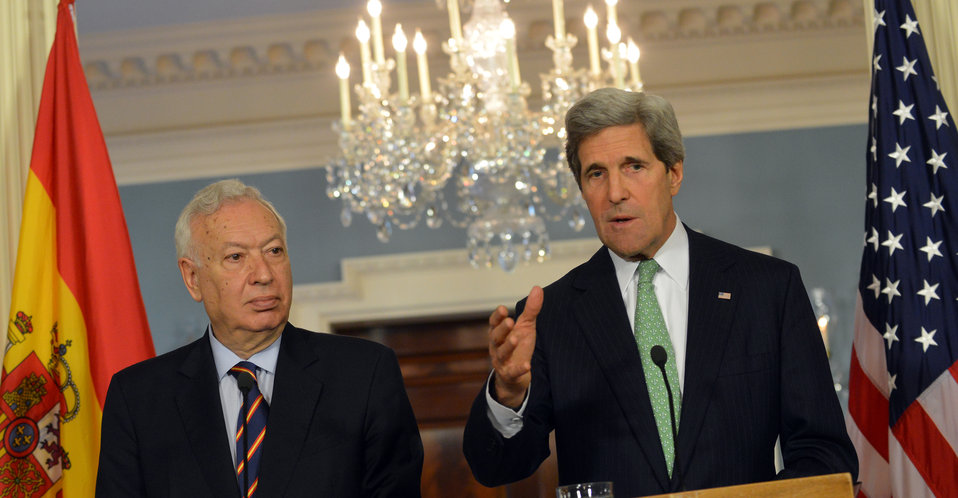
Secretary Kerry and Spanish Foreign Minister Garcia-Margallo Address Reporters

U.S. Secretary of State John Kerry and Spanish Foreign Minister Jose Manuel Garcia-Margallo address reporters after their bilateral meeting at the U.S. Department of State in Washington, D.C., on April 30, 2013.